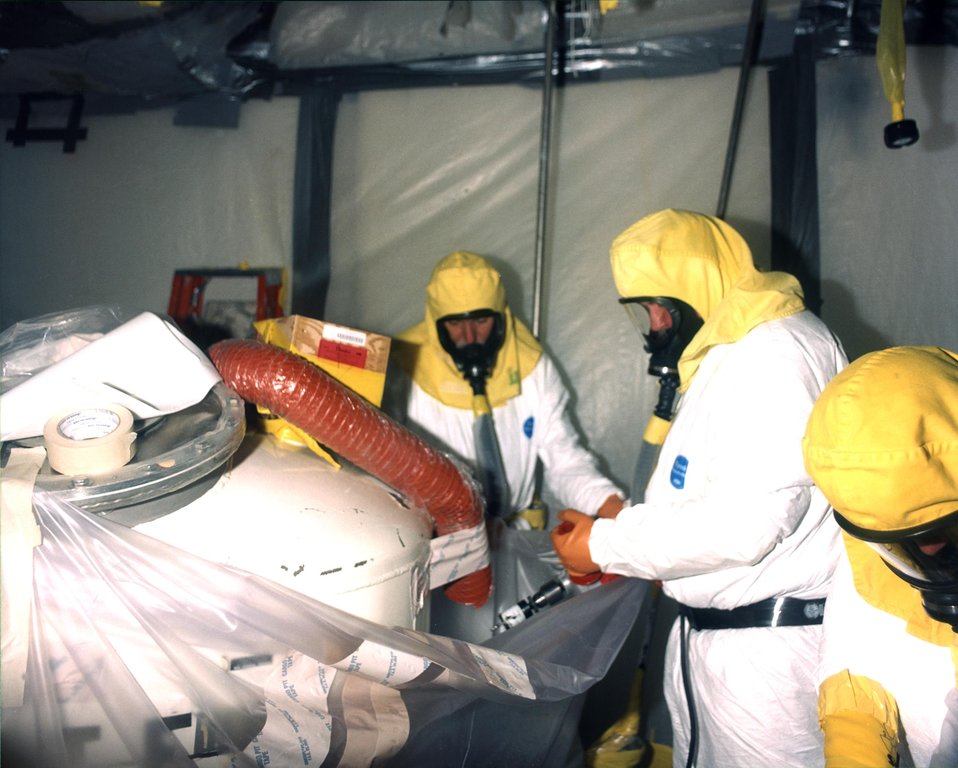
DEACTIVATION ACTIVITY INSIDE BUILDING 776/777.
THE ROCKY FLATS ENVIRONMENTAL TECHNOLOGY SITE, KNOWN AS ROCKY FLATS, IS LOCATED 15 MILES NORTHWEST OF DENVER, COLORADO. FOR 40 YEARS, PRIOR TO DECEMBER 1989, ROCKY FLATS MADE PARTS FOR NUCLEAR WEAPONS. CURRENTLY THE SITE'S MISSION IS TO SAFELY CLEANUP AND CLOSE DOWN ROCKY FLATS.